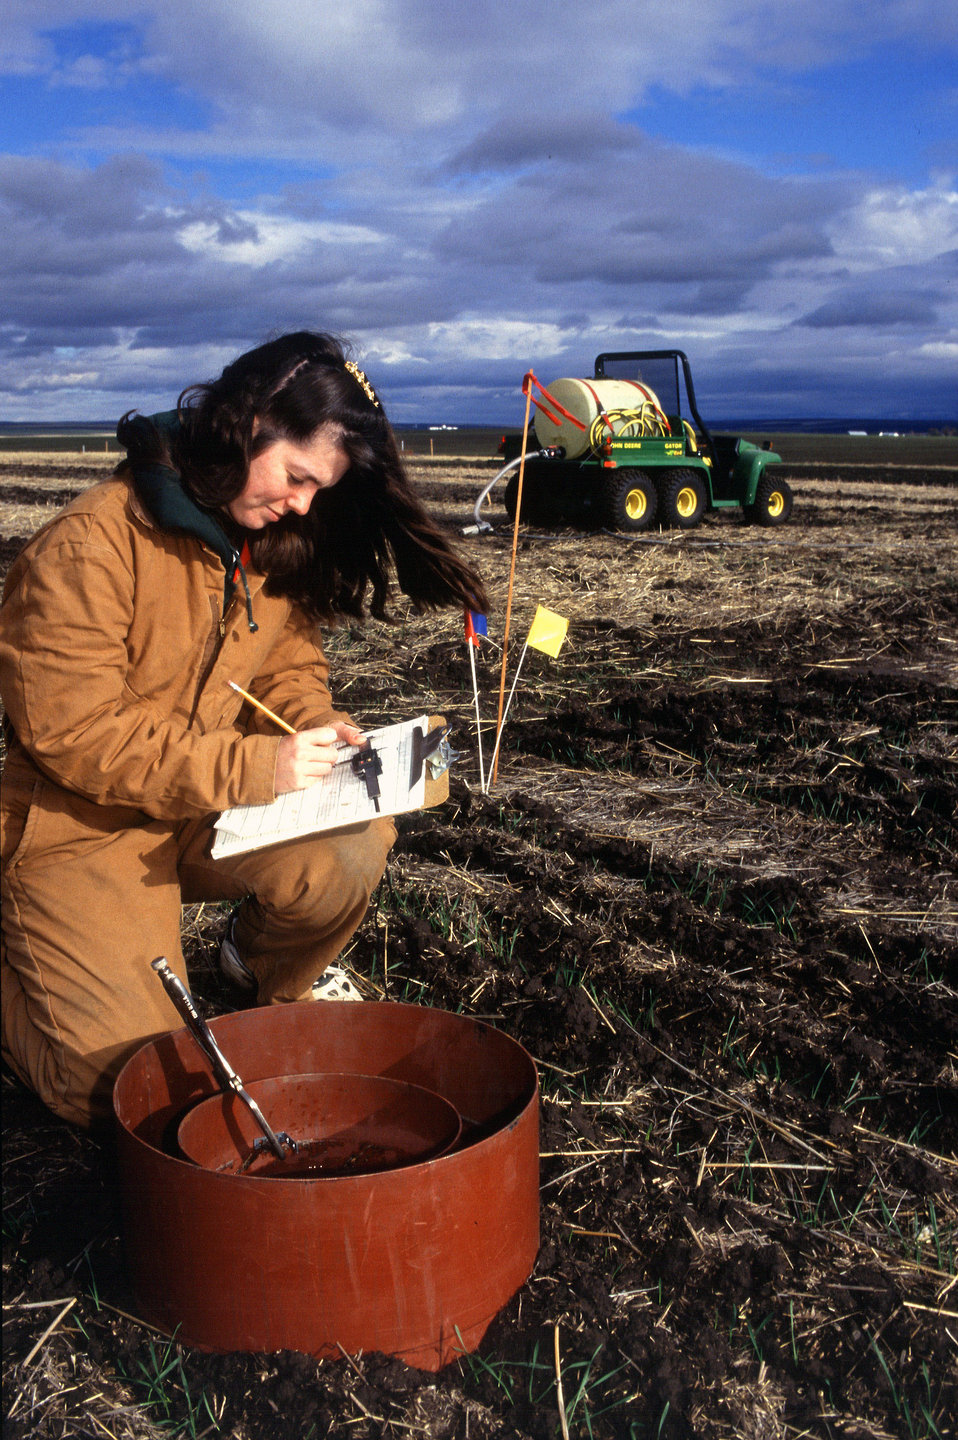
U.S. Department of Agriculture (USDA) Agricultural Research Service (ARS) biological science technician Amy Baker records water depth measurements made with an electronic caliper during infiltration studies on no-till plots.